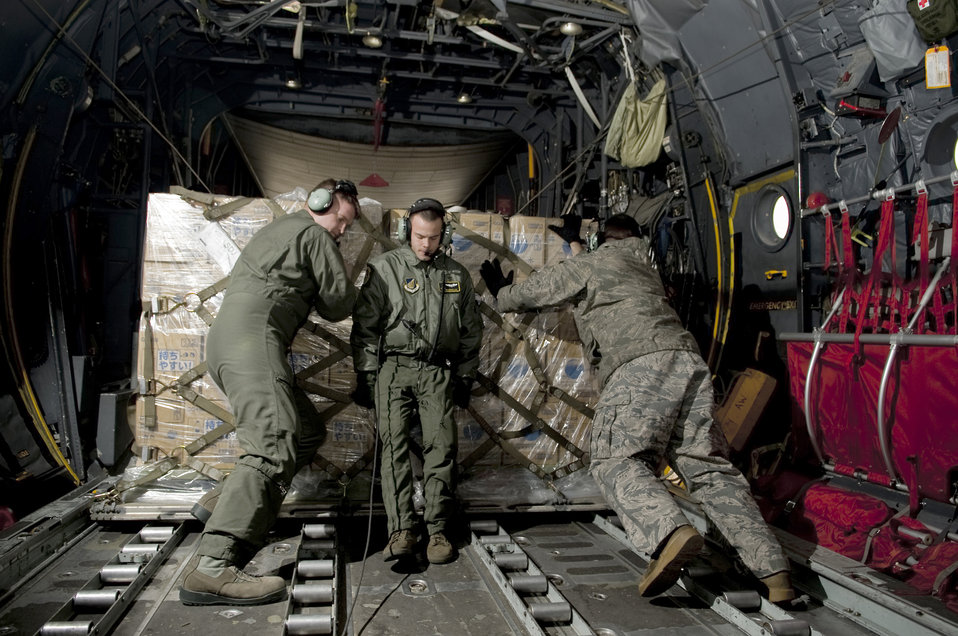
Yokota Airmen Operation Tomodachi

Airmen from the 36th Airlift Squadron push a pallet off a C-130H Hurcules March 26, 2011, at Sendai Airport, Japan.